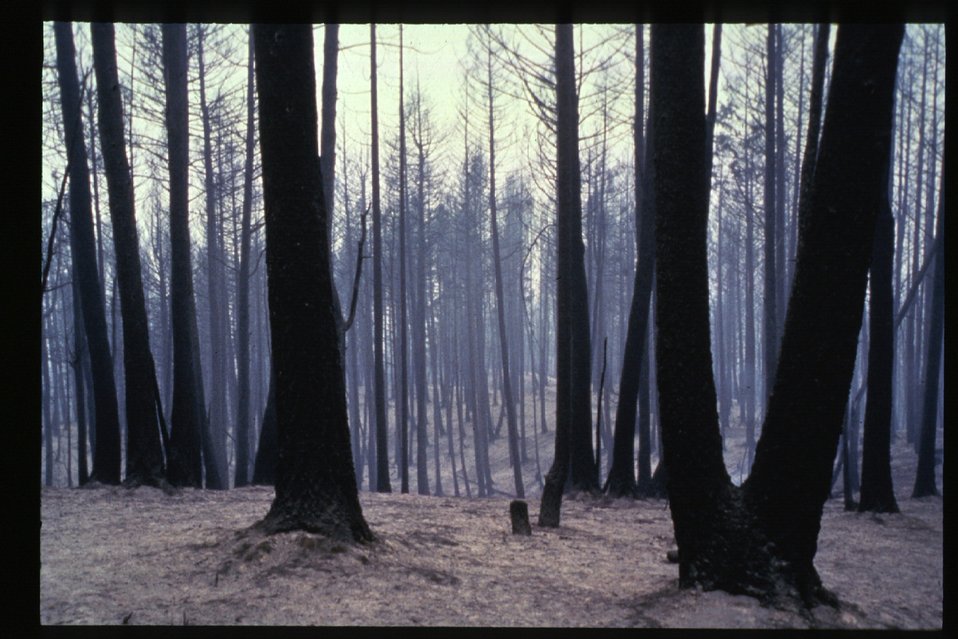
8th Street Fire Burnt Trees Four Rivers Field Office LSRD Lower Snake River District